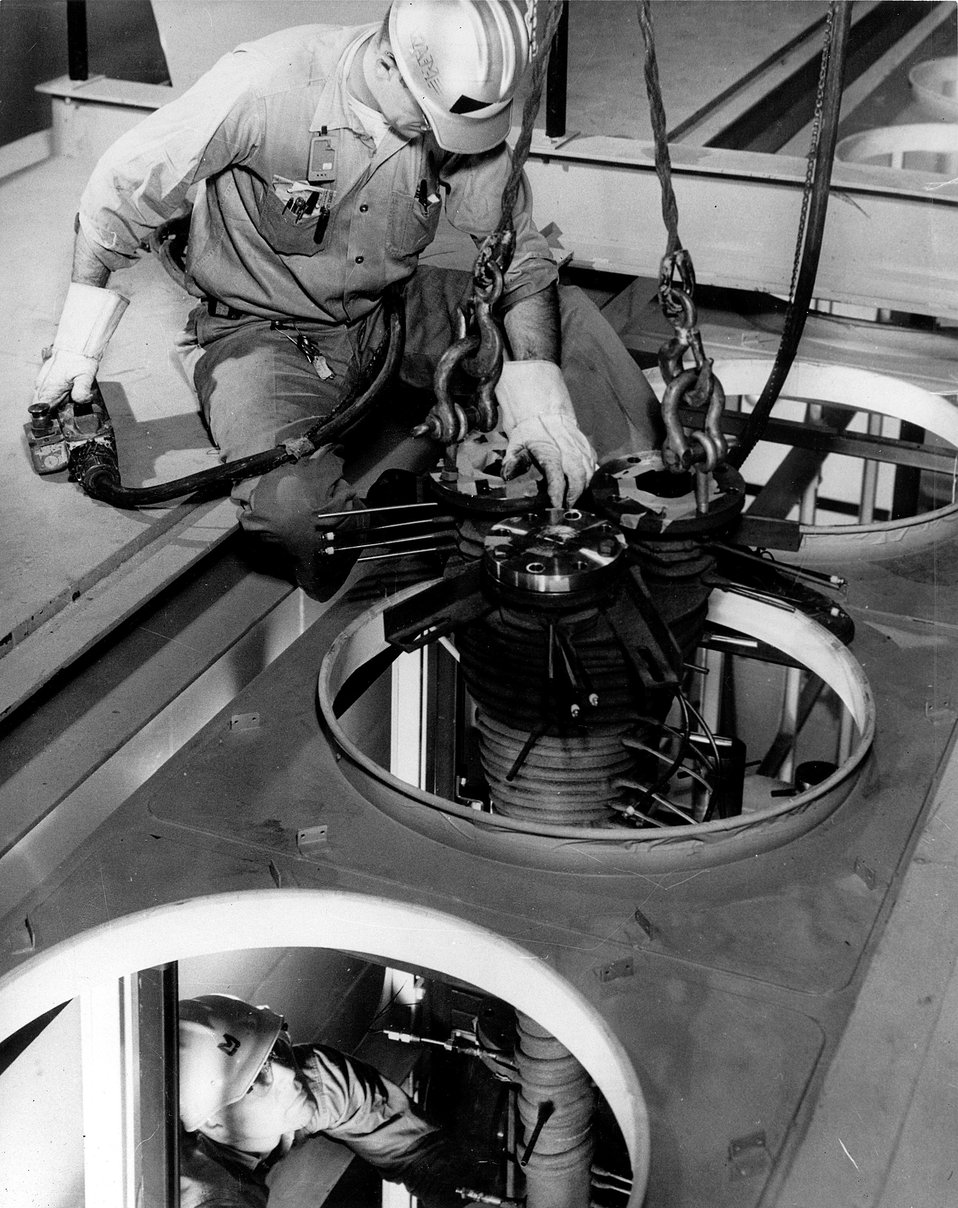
Equipment being installed in fluoride volatility semiworks.
c.1964